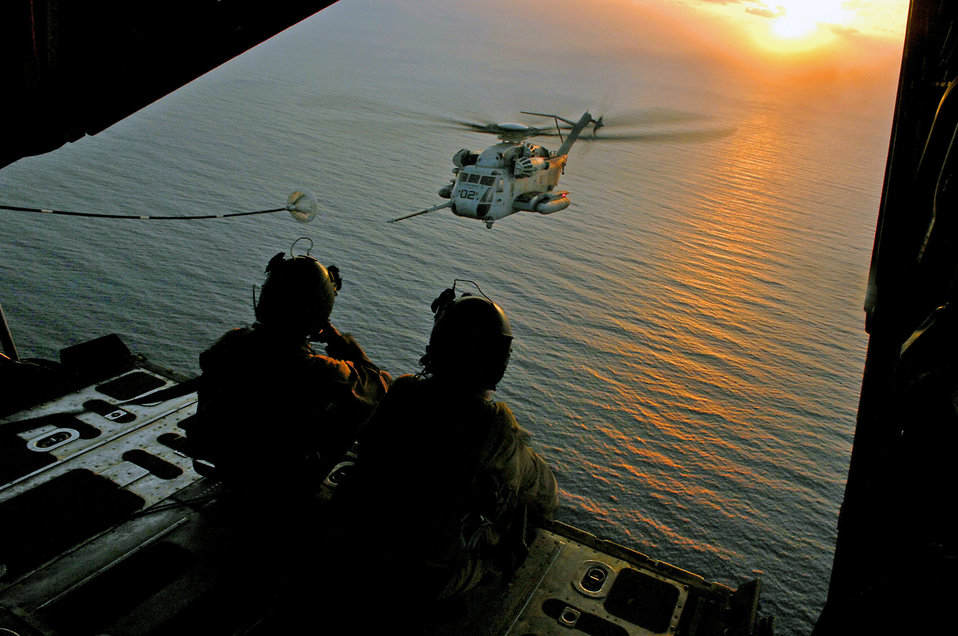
Getting ready to 'fill 'er up'

Senior Airmen Daniel Sullivan (left) and Renea Zachary observe a Marine CH-53 Sea Stallion from their HC-130 Hercules during a refueling operation Jan. 19. The Airmen are loadmasters with the 71st Expeditionary Search and Rescue Squadron based at Moody Air Force Base, Ga.